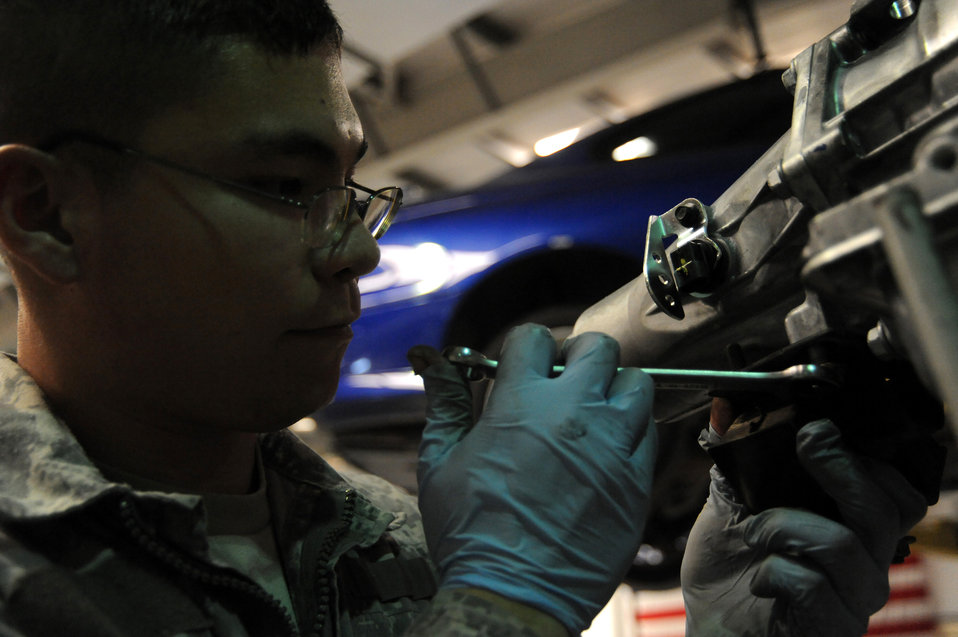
Let's get it started

Senior Airman Michael Jakubec tightens a bolt for a mounting bracket on a new transmission for a Pontiac GTO April 26 at an air base in Southwest Asia. The bracket will mount to the body of the vehicle for rear support. The GTO is used as a chase car to help guide U-2 pilots during takeoffs and landings. Airman Jakubec is a 380th Expeditionary Logistics Readiness Squadron vehicle maintainer deployed from Kadena Air Base, Japan. He is from Spanaway, Wash.